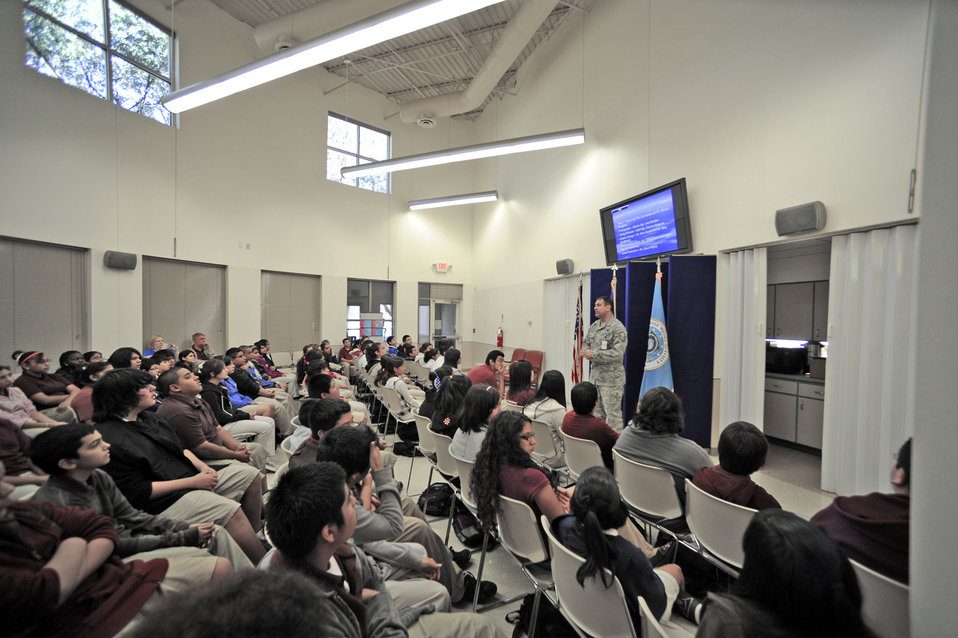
Middle school students tour Defense Media Activity-San Antonio

Master Sgt. Ben Gonzales gives students a tour overview of the Defense Media Activity-San Antonio Nov. 6, 2009. Sergeant Gonzales is the NCOIC of Print News and an editor of stories posted on AF.MIL, the Air Force's official Web site. The students are from nearby Rhodes Middle School.